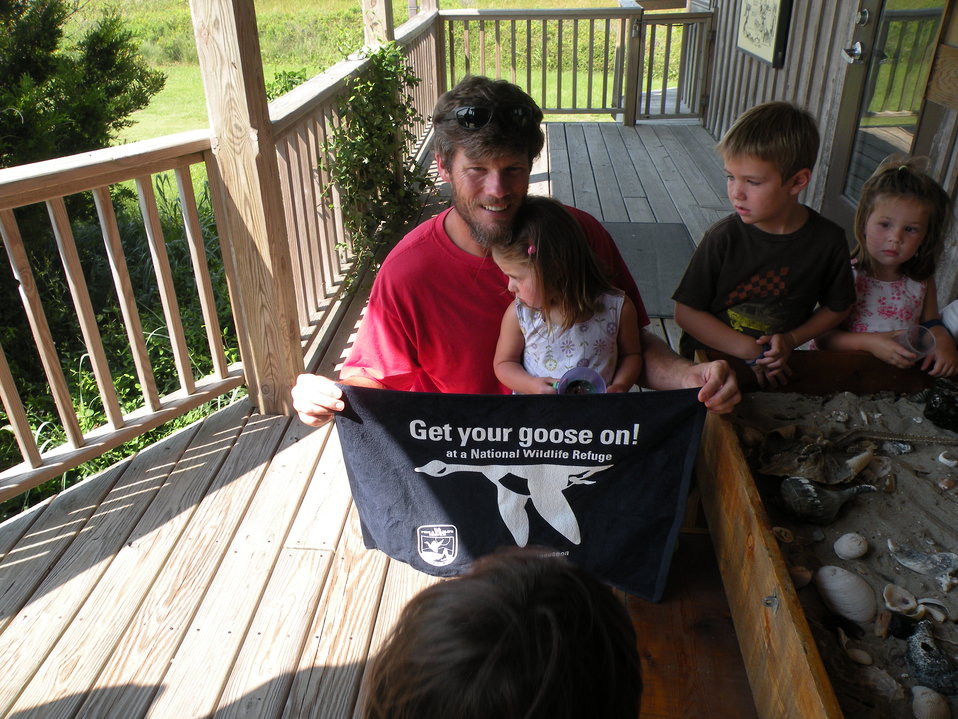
Get Your Goose On!

Outer Banks Mommy and Me group enjoy learning about turtles and Get there Goose on!

Cindy Heffley/USFWS